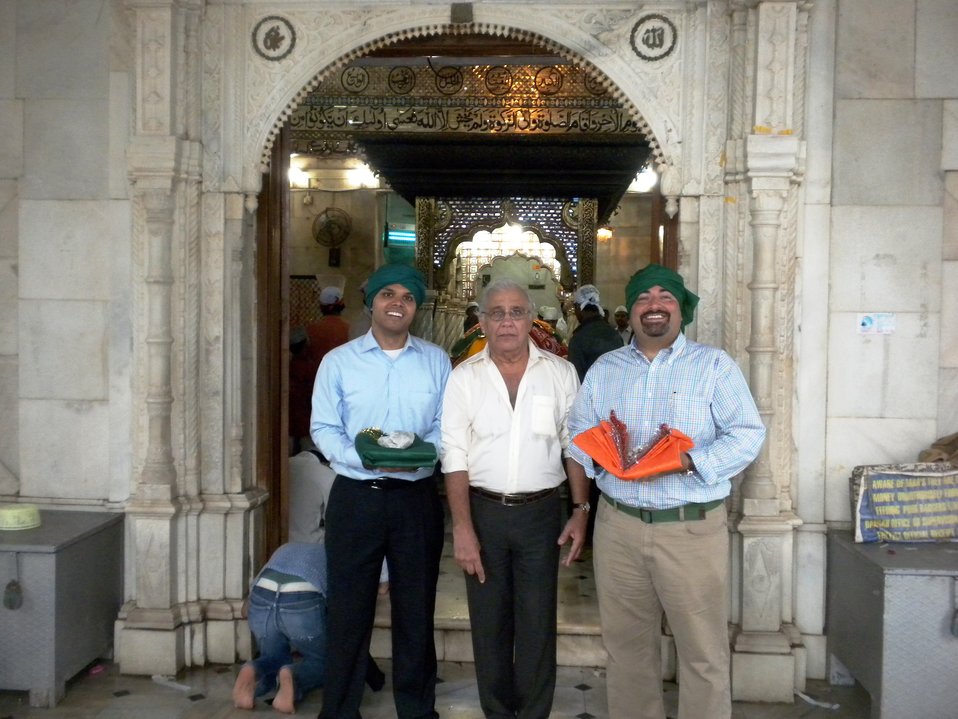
Acting Deputy Assistant Secretary Keshap Shares Photos from India and Nepal

U.S. Acting Deputy Assistant Secretary in the Bureau of South and Central Asian Affairs Atul Keshap shares photos from his August 2010 trip to India and Nepal.